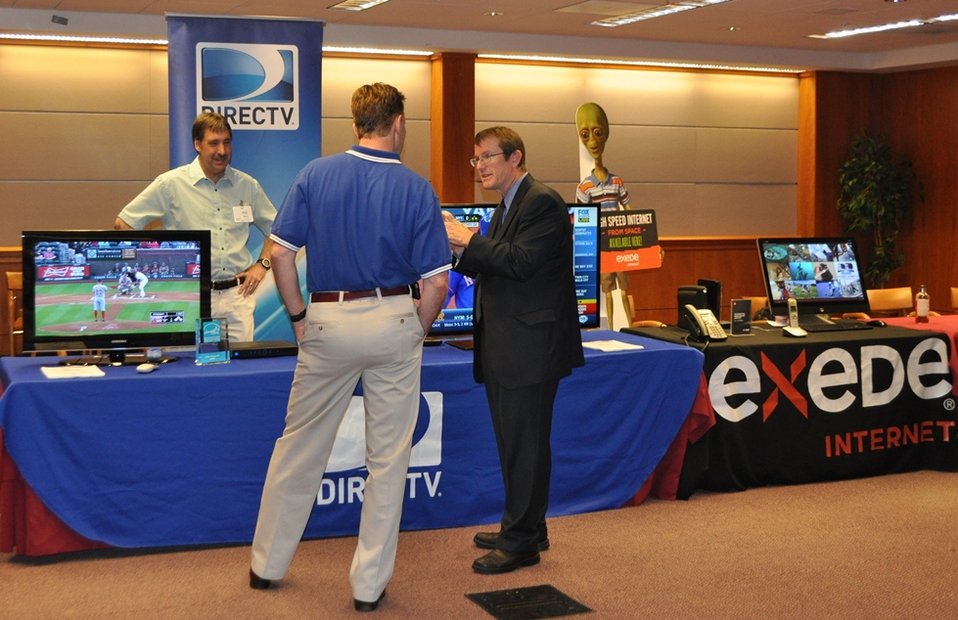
5.14.2014 Satellite Technology Demonstration

Satellite Technology Demonstration at FCC